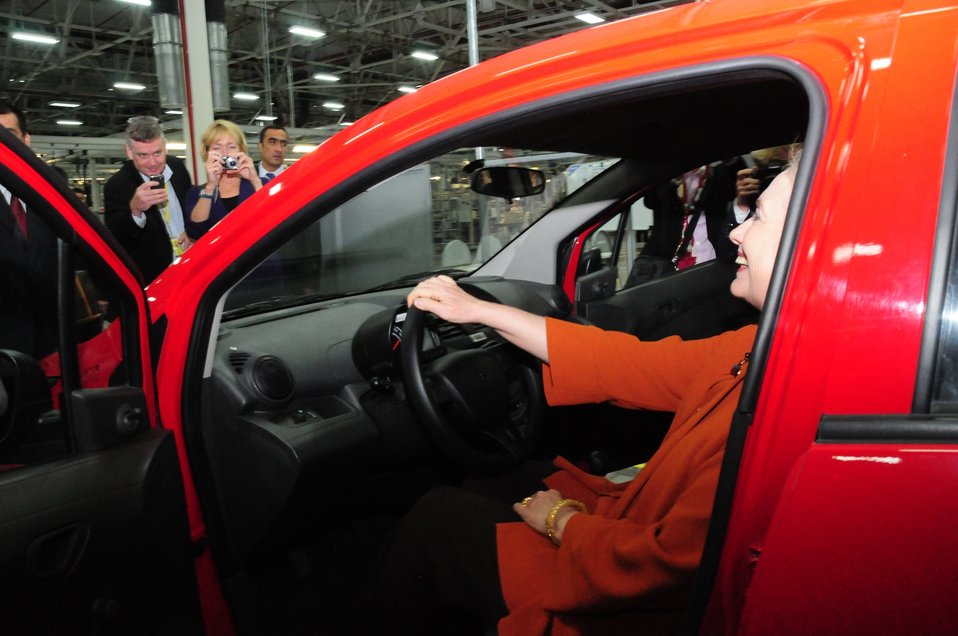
Secretary Clinton Sits Behind the Wheel of a Chevrolet Spark

U.S. Secretary of State Hillary Rodham Clinton sits behind the wheel of a new Chevrolet Spark at the General Motors (GM) factory in Tashkent, Uzbekistan, on October 23, 2011.